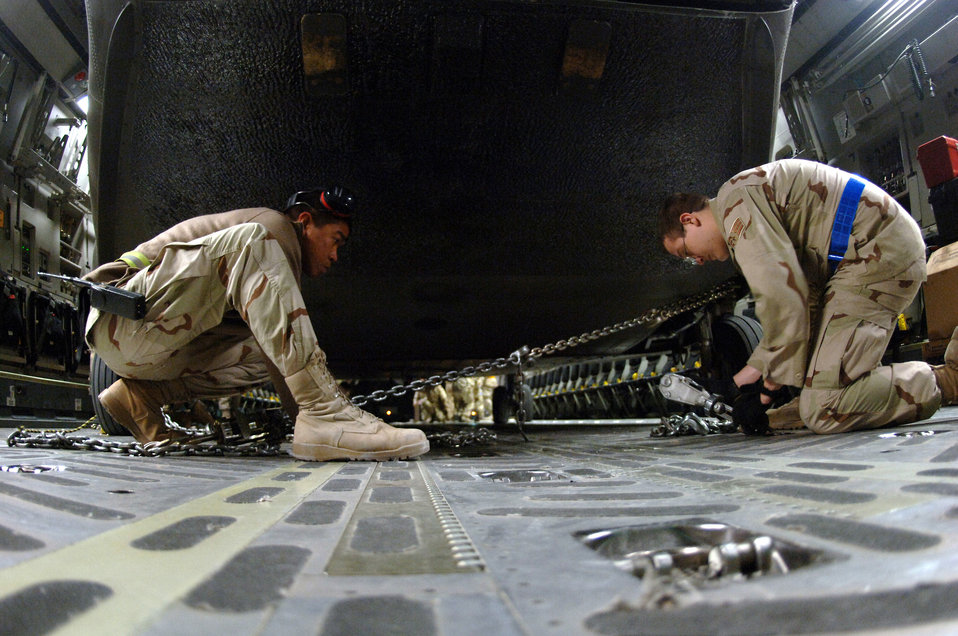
C-17 cargo load

Crewmembers with the 817th Expeditionary Airlift Squadron and their Australian forces counterparts secure an Australian Army CH-47 helicopter onto a C-17 Globemaster III at a deployed location in Southwest Asia on Sunday, March 12, 2006. The C-17 is from McChord Air Force Base, Wash.